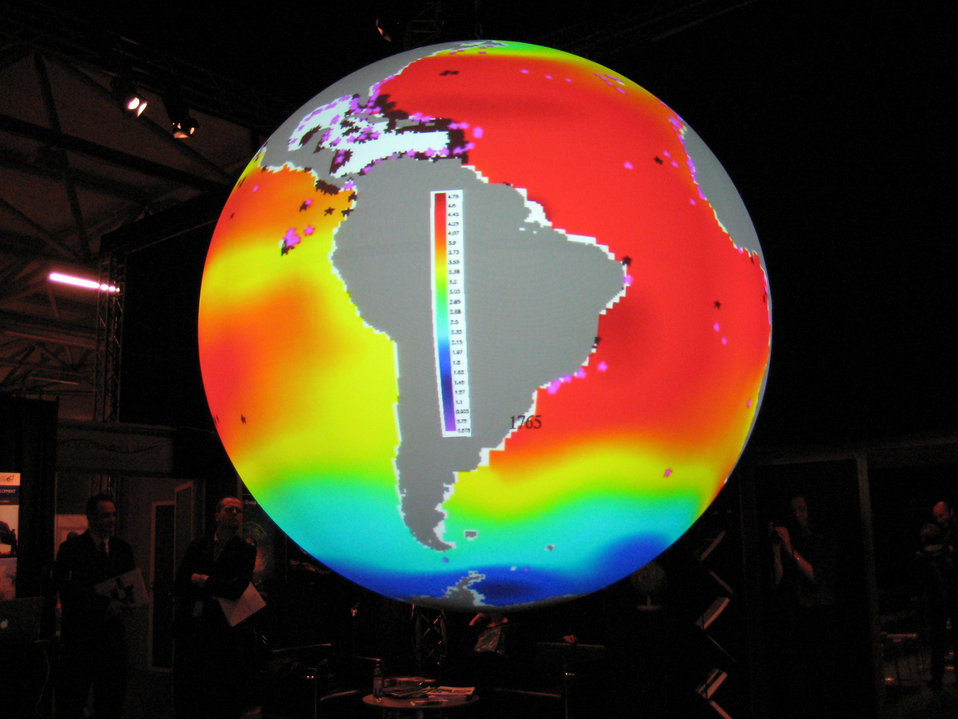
Science on a Sphere at the U.S. Center during COP15 (Conference of the Parties to the UN Framework Convention on Climate Change) in Copenhagen, Denmark December 10, 2009.